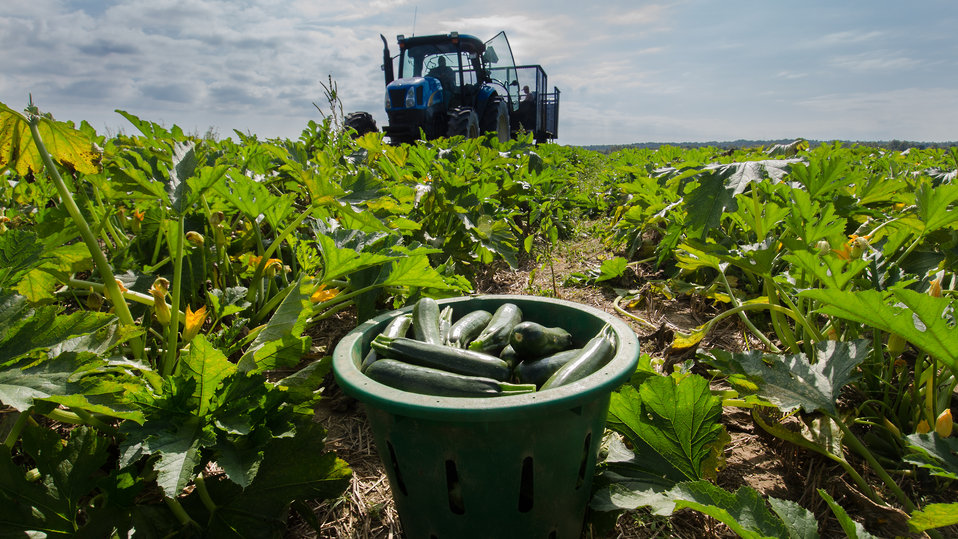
Just-picked green zucchini squash waits to be loaded onto a processing trailer at Kirby Farms in Mechanicsville, VA on Friday, Sep. 20, 2013. Migrant workers will carefully rinse and pack the fruit for shipment to wholesalers. Kirby Farms is a third-generation family farm that covers 500 acres and generates produce and grains on a year-around operation.